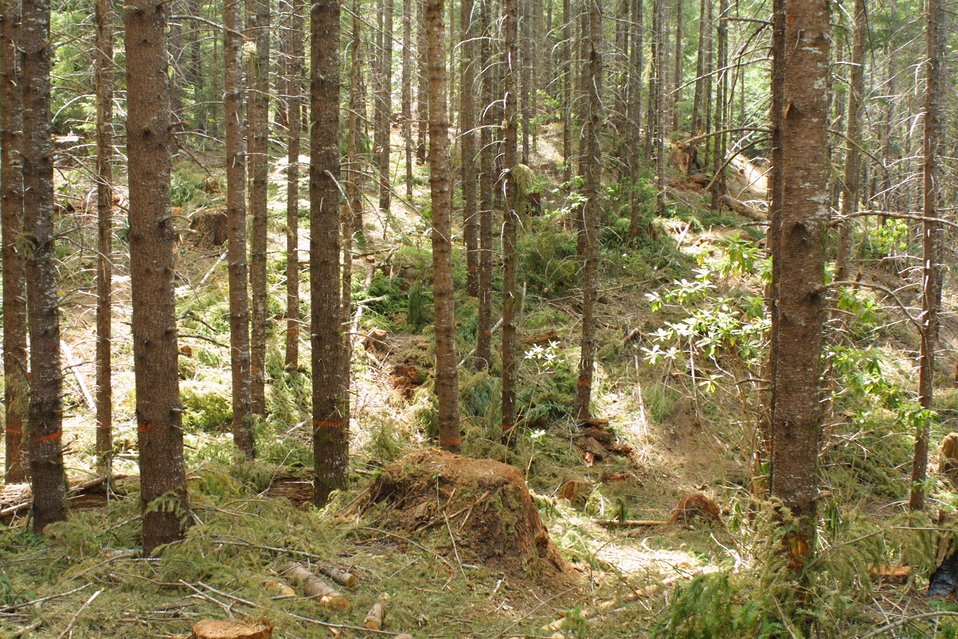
Camas East Timber Sale in Late Successional Reserve.